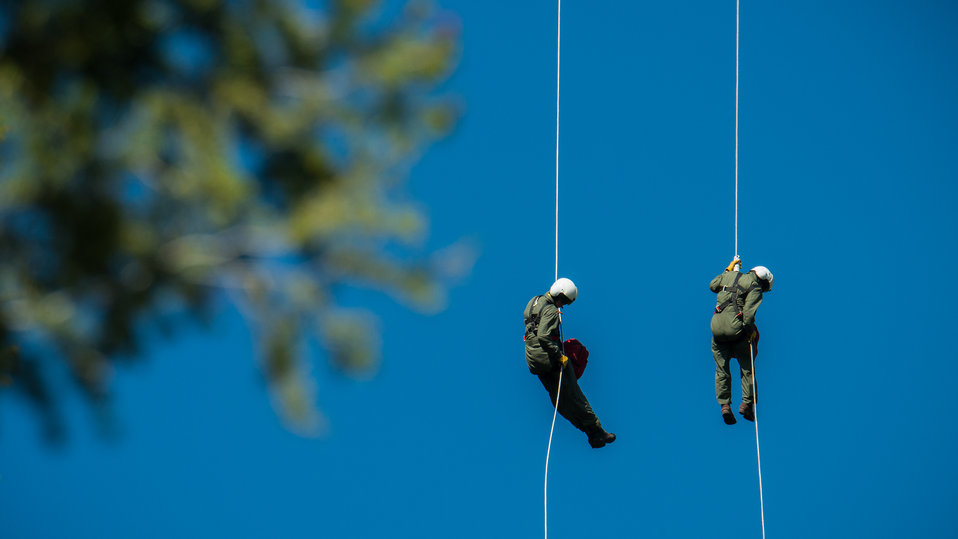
Veteran wildland firefighter rappellers use various techniques to negotiate the wind from the helicopter rotor blades above them, and away from tree branches, beside and below, as they perform a controlled and safe rappel at the U.S. Department of Agriculture (USDA) U.S. Forest Service (USFS) National Helicopter Rappel Program’s Rappel Academy at Salmon Air Base in Salmon, ID on Thursday, May 15, 2014. From May 12, 2014, 72 veteran rappellers from all over the nation, 30 support staff, and three helicopters with flight crews attend the training at Salmon Air Base. Participants will rappel into the Perreau Creek area. The annual training is delivered in accordance with the National Rappel Operations Guide; strengthen leadership, teamwork, and communications within the rappel community, and produces quality aerial delivered firefighters for use in fire and aviation operations. The USDA Forest Service National Helicopter Rappel Program’s primary mission is initial attack. Rappel crews may be utilized for large fire support, all hazard incident operations, and resource management objectives.